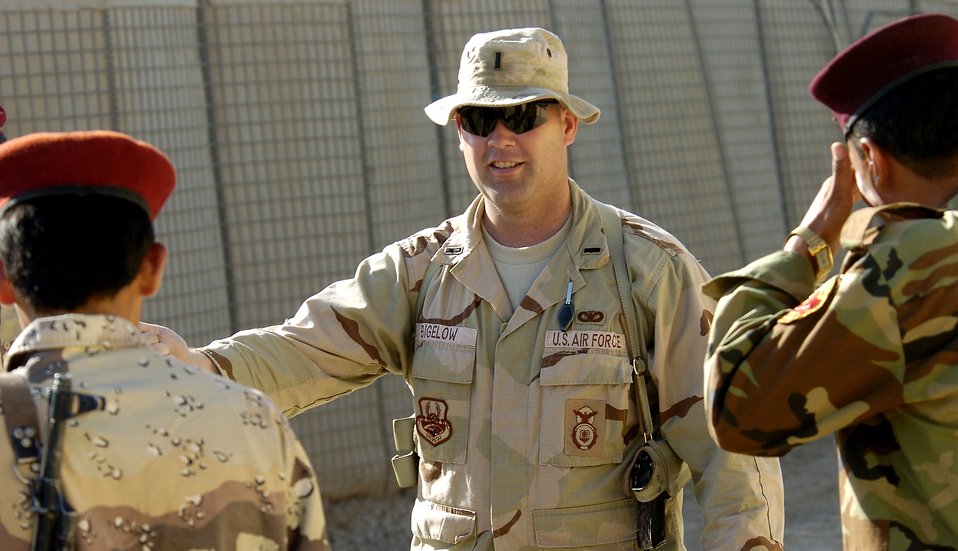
Airmen train Iraqi soldiers on base defense

First Lt. Frank Bigelow talks with his Iraqi counterparts at Ar Rasheed Base, Iraq, on Thursday, May 25, 2006. Lieutenant Bigelow is the assistant team chief of Base Defense Unit Team 3602, which advises and trains the Iraqi Army on base defense procedures.